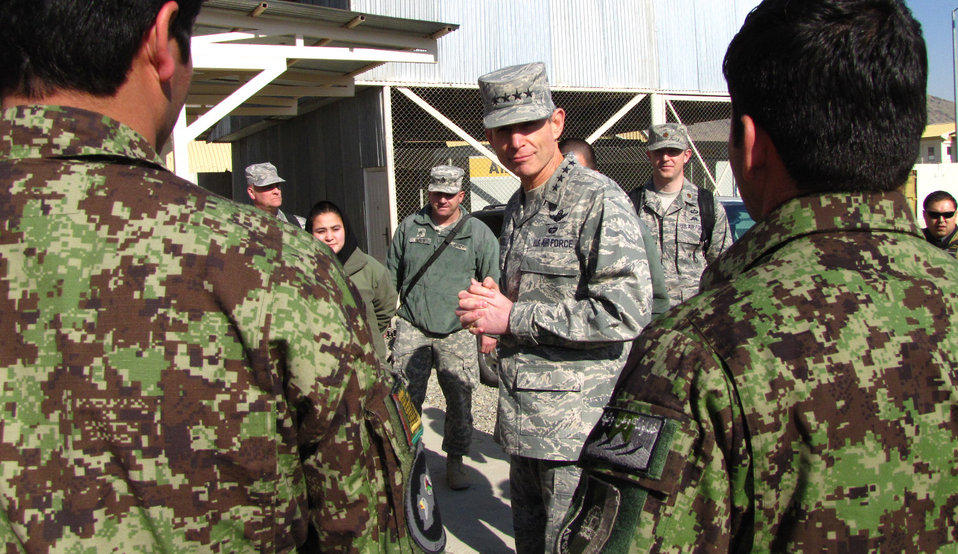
Air Force chief of staff visits Thunder Lab

Air Force Chief of Staff Gen. Norton Schwartz talks to members of the Afghan Air Force during a visit to the English immersion lab known as